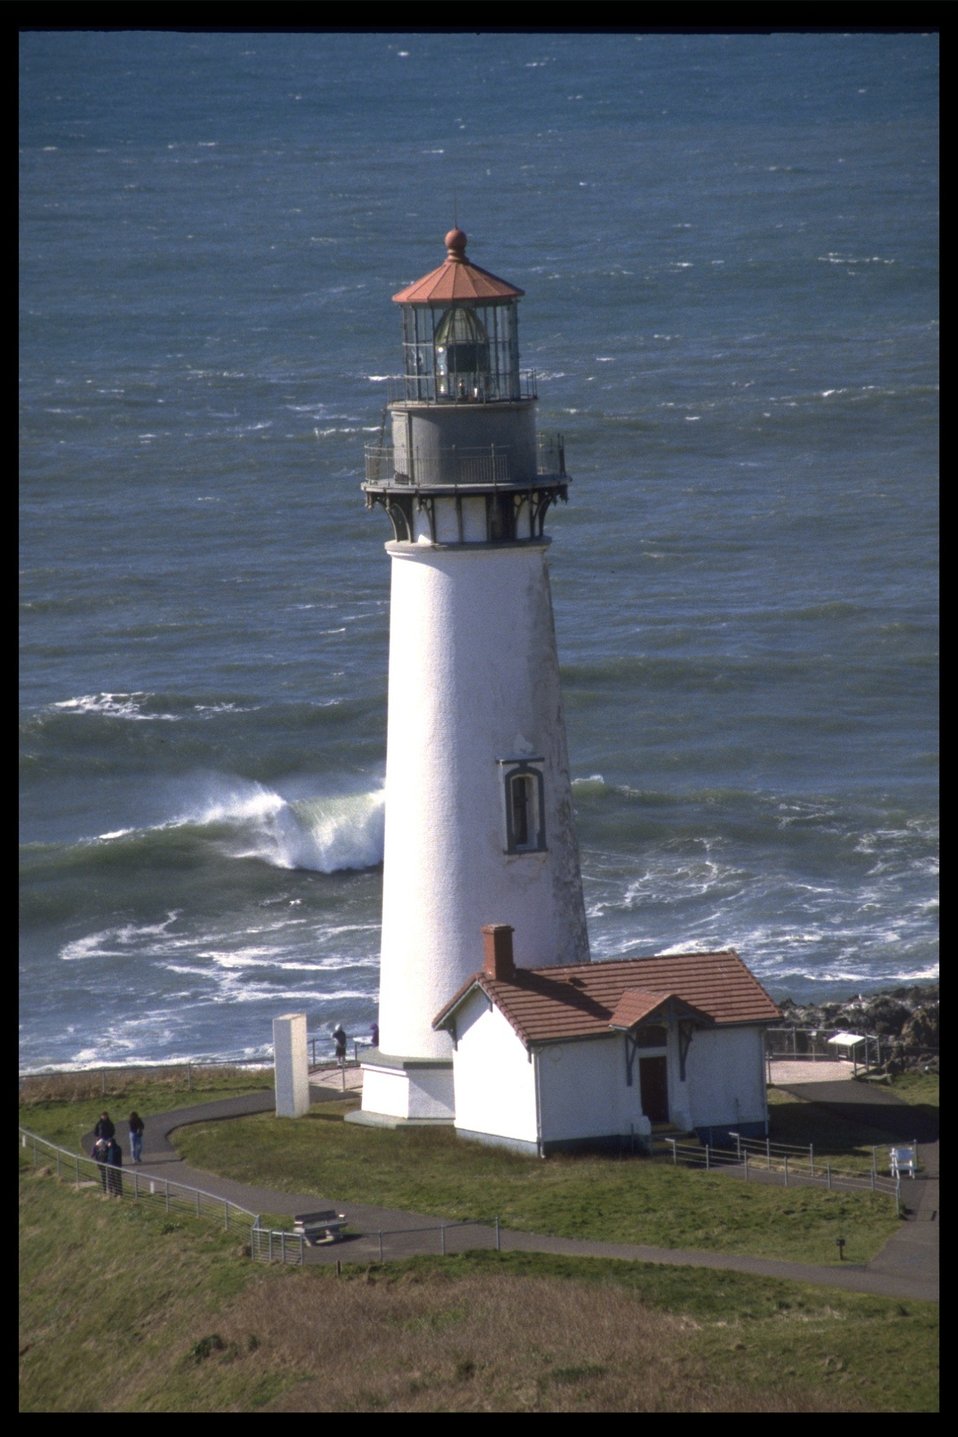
Yaquina Head Lighthouse.